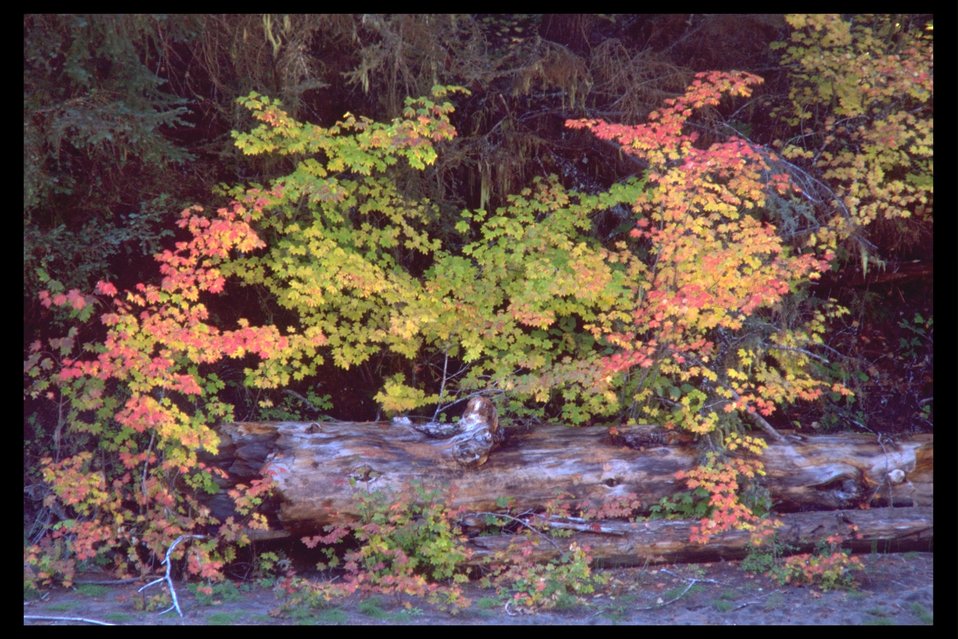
A log, framed by fall colors, along the Rogue River near Union Creek.